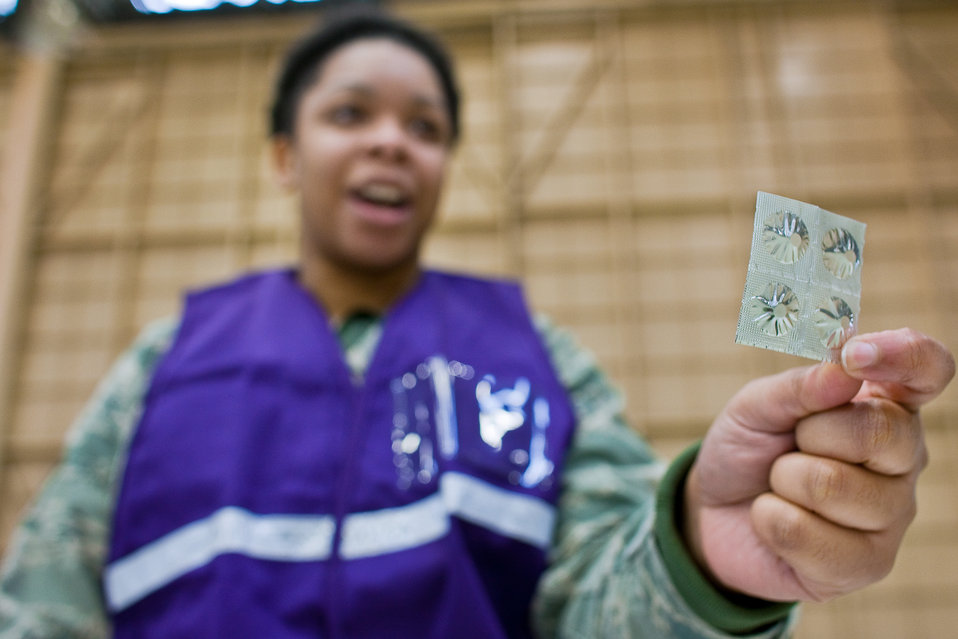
PACOM officials direct distribution of potassium iodide tablets

Staff Sgt. Alicia Tucker explains how and when to take potassium iodide tablets March 22, 2011, at Yokota Air Base, Japan. U.S. Pacific Command officials directed distribution of potassium iodide tablets as a precautionary measure. Base officials are stressing there is no indication of increased exposure at Yokota AB. Sergeant Tucker is assigned to the 374th Medical Operations Squadron.